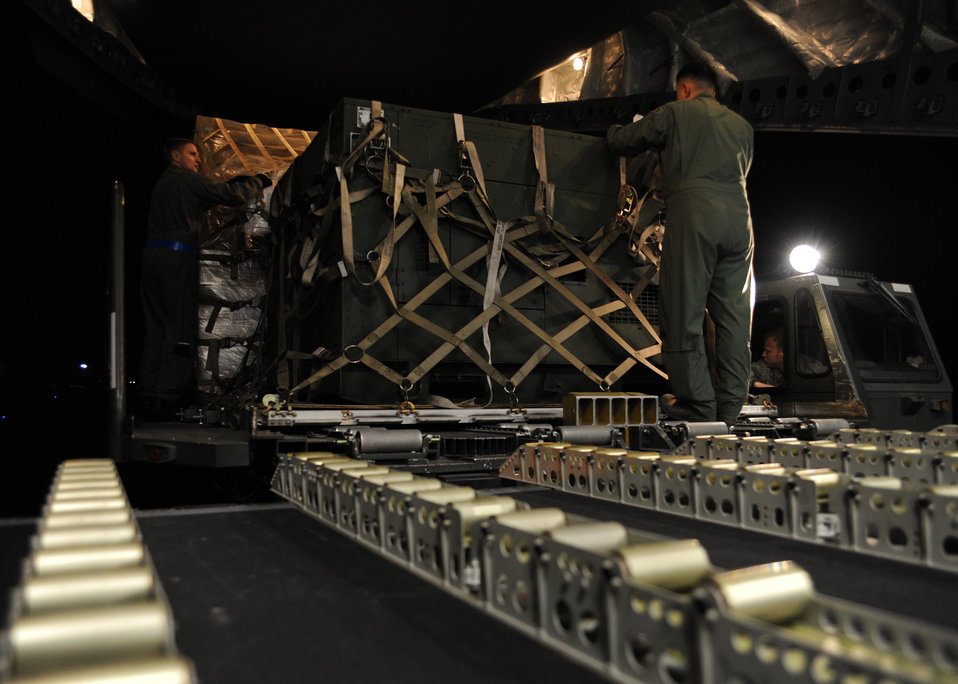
Haiti Humanitarian Effort

Equipment is loaded onto a Charleston AFB C-17 at Joint Base McGuire-Dix-Lakehurst, New Jersey, Jan. 15, 2010. The Charleston AFB C-17 was used to transport equipment needed to aid the humanitarian effort in Haiti.